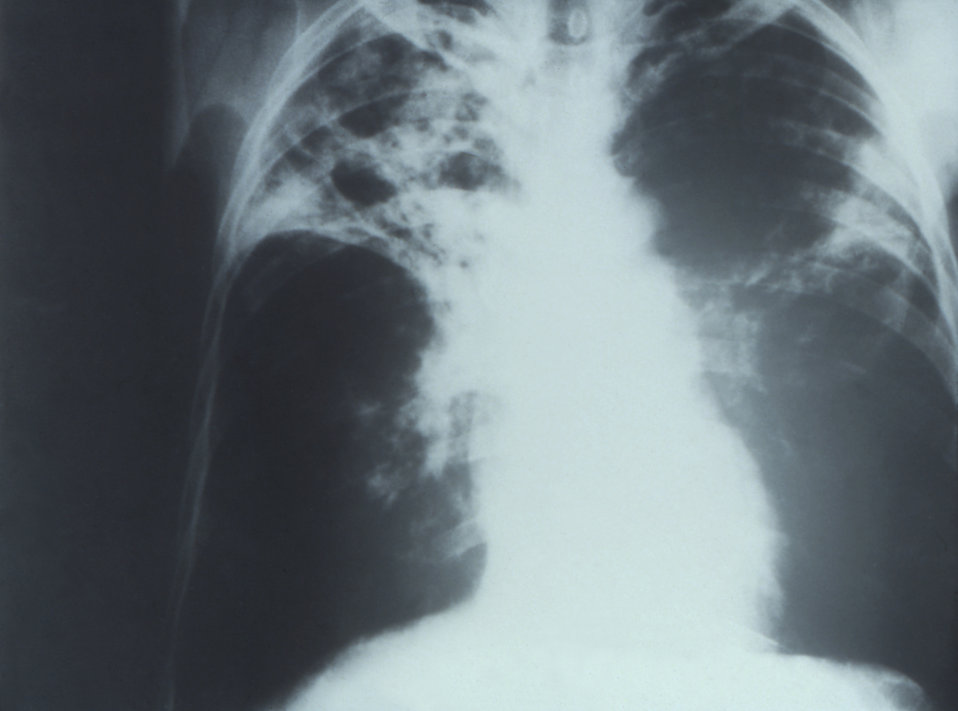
This is an anteroposterior (AP) x-ray of a patient's chest, who was diagnosed with bilateral pulmonary tuberculosis.